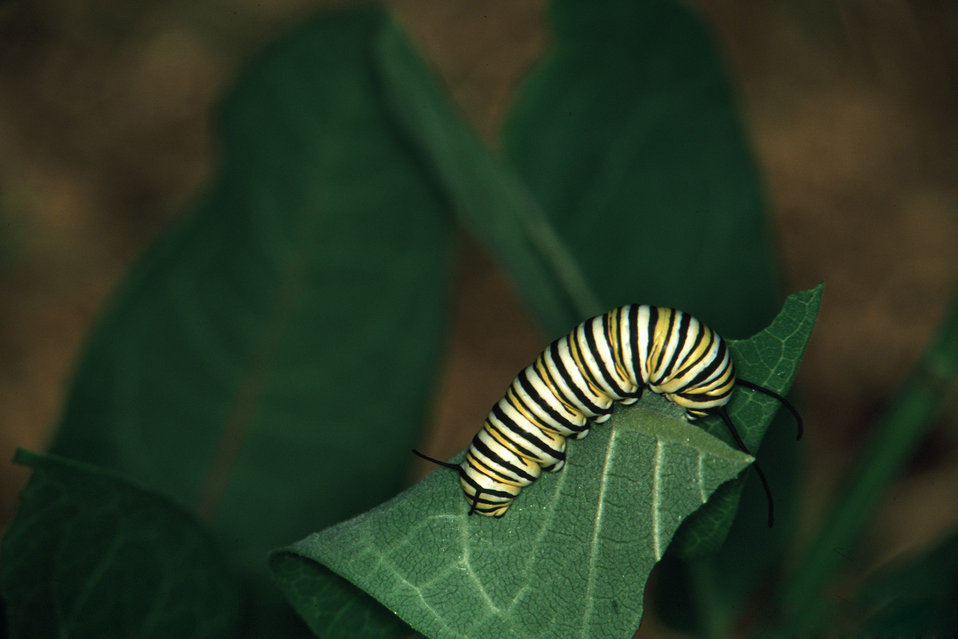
A monarch butterfly caterpillar sits on leaf. Butterflies are one of nature’s many pollinators for flowers and crops and are crucial in production for fruits and vegetables.